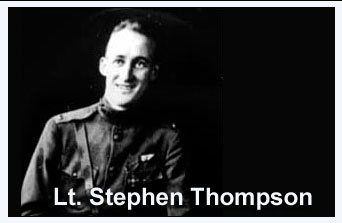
Lt. Stephen W. Thompson was the first in an American uniform to shoot down an enemy airplane.